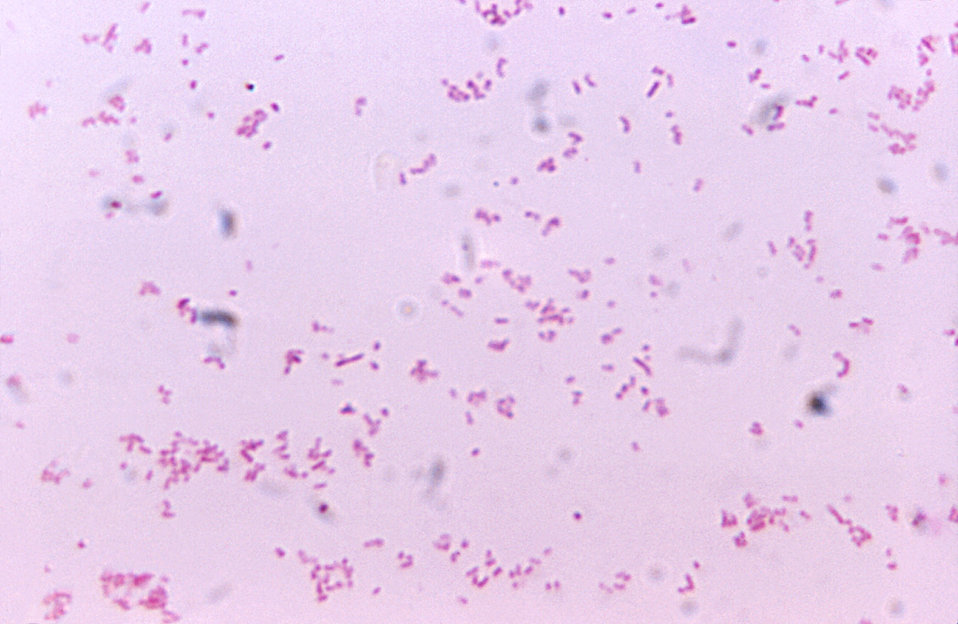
Magnified 1125X, this photomicrograph revealed the presence of numerous Gram-negative bacilli, i.e., rod-shaped organisms, Eikenella corrodens, which in part, derives its name from the fact that when this organism is grown on agar medium, it appears to 'erode' the medium. E. corrodens is a facultative anaerobic organism, which means that in the presence of environmental oxygen it creates ATP, but switches to fermentation in oxygen's absence. As a commensal organism, E. corrodens is normally found in the human mouth and upper airways, and has been found to be the cause of infection in cancer patients, and patients injured through a bite injury.